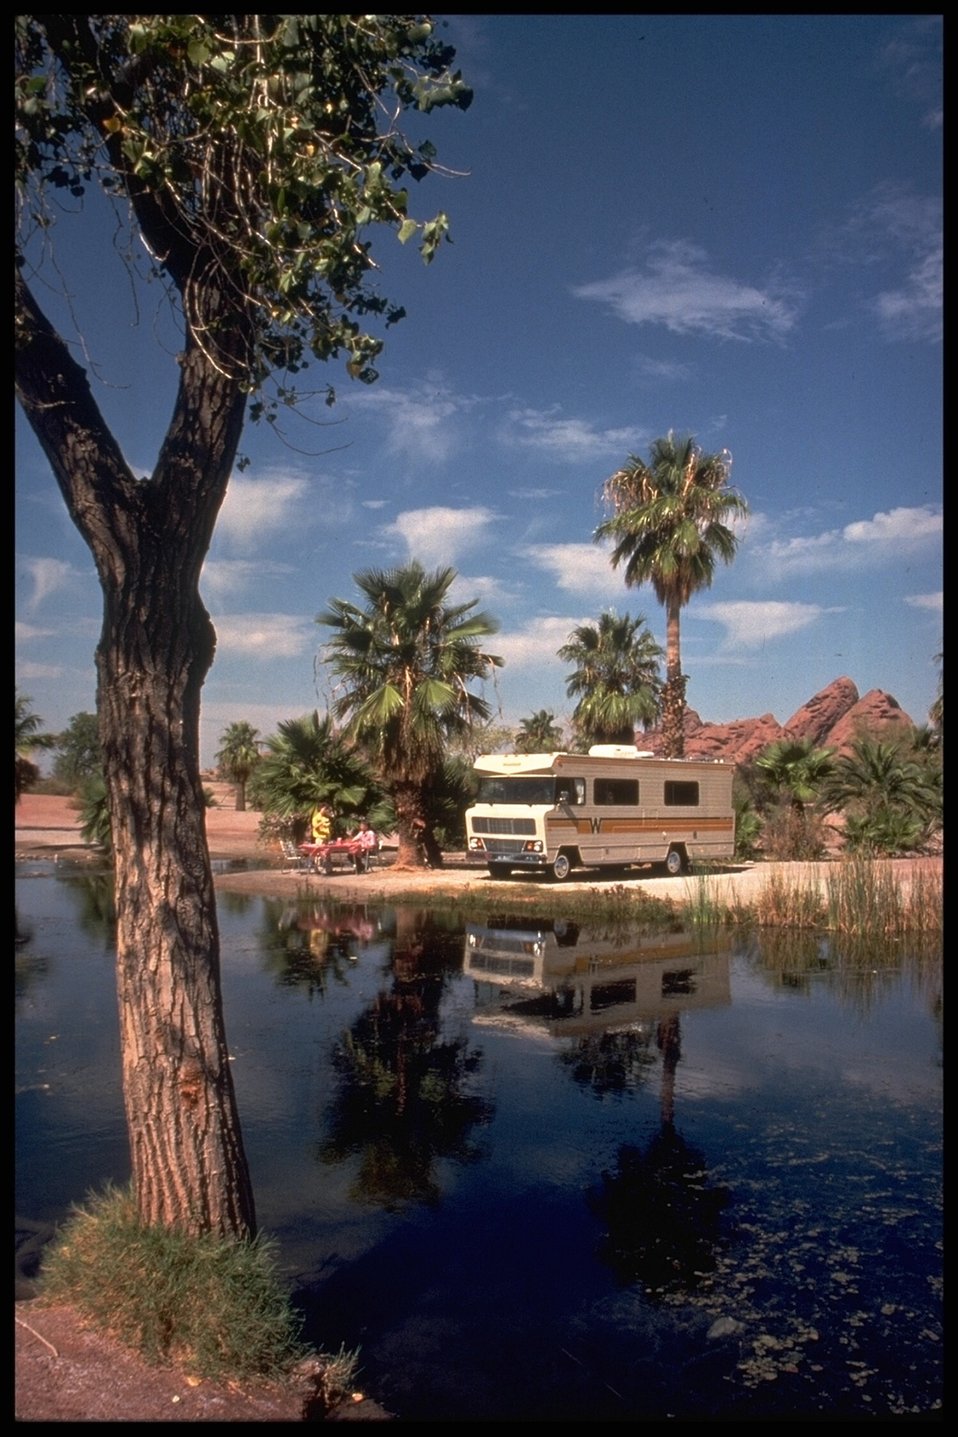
Long-term visitor areas along the Colorado River in Yuma, Arizona, bring visitors from across the states.